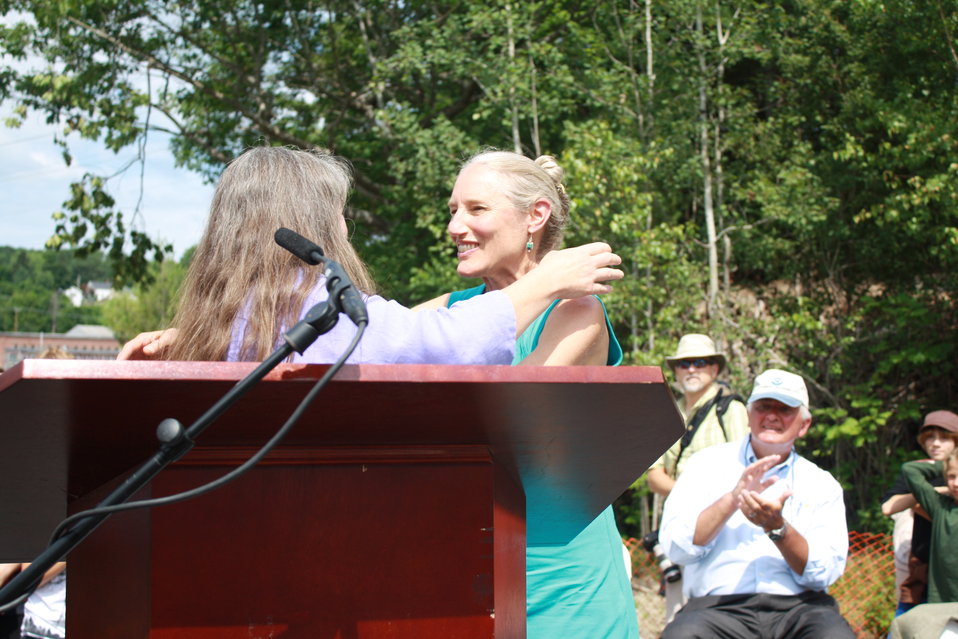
Veazie Dam Removal

Laura Rose Day, Executive Director of the Penobscot River Restoration Trust, hugs Sally Stockwell, Director of Conservation for Maine Audubon.